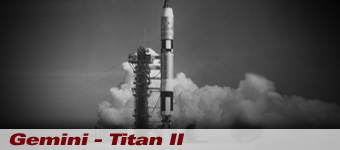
Project Mercury history spotlight graphic. The original seven Mercury astronauts were from left, front row: Virgil “Gus” Grissom, Scott Carpenter, Donald “Deke” Slayton and Gordon Cooper; back row: Alan Shepard, Walter Schirra and John Glenn.